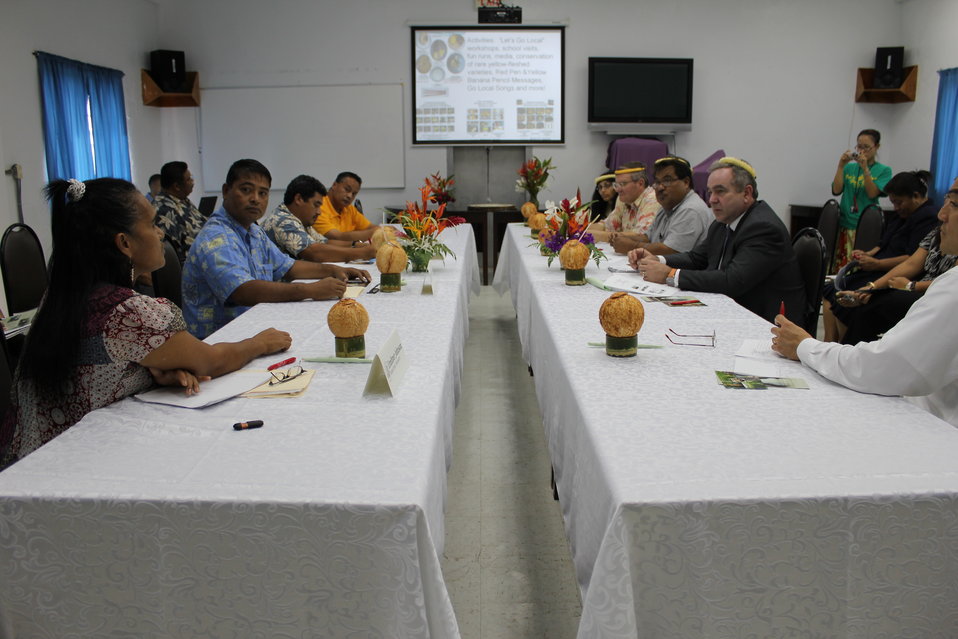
Assistant Secretary Campbell and Assistant Administrator Biswal Hold a Roundtable Discussion With Environmental NGO Leaders

Assistant Secretary of State for East Asian and Pacific Affairs Kurt Campbell, joined by Assistant Administrator Biswal, holds a roundtable discussion with environmental non-government organization (NGO) leaders from Micronesia Conservation Trust, the Nature Conservancy, Conservation Society of Pohnpei, and the Island Food Community of Pohnpei in Palikir, Pohnpei, on July 1, 2011. The conversation highlights NGO efforts to promote conservation at the local and regional levels, challenges faced by low-lying remote atolls, and tools and support available for effective conservation efforts. Participants include Pohnpei State Governor John Ehsa and U.S. Ambassador to the Federated States of Micronesia Peter A. Prahar.